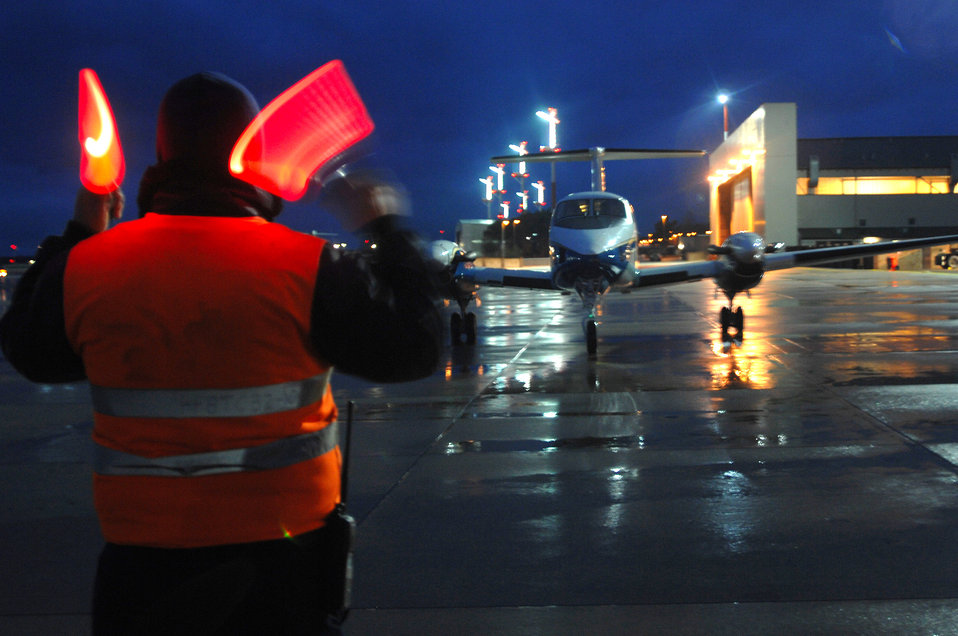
Hungarian AF leader visits Ramstein

David Moore, Ramstein transit alert, guides a C-20 distinguished visitor's aircraft to its parking spot Feb 5, on the Ramstein Air Base flightline. Lt. General Laszlo Tombol, Commander Hungarian Joint Forces Command, happen to be the distinguished visitor. Lt. Gen. Rod Bishop 3rd Air Force Commander and the 3rd Air Force played host to the Hungarian general and discussed important topics helping both countries make head way on the war on terror.